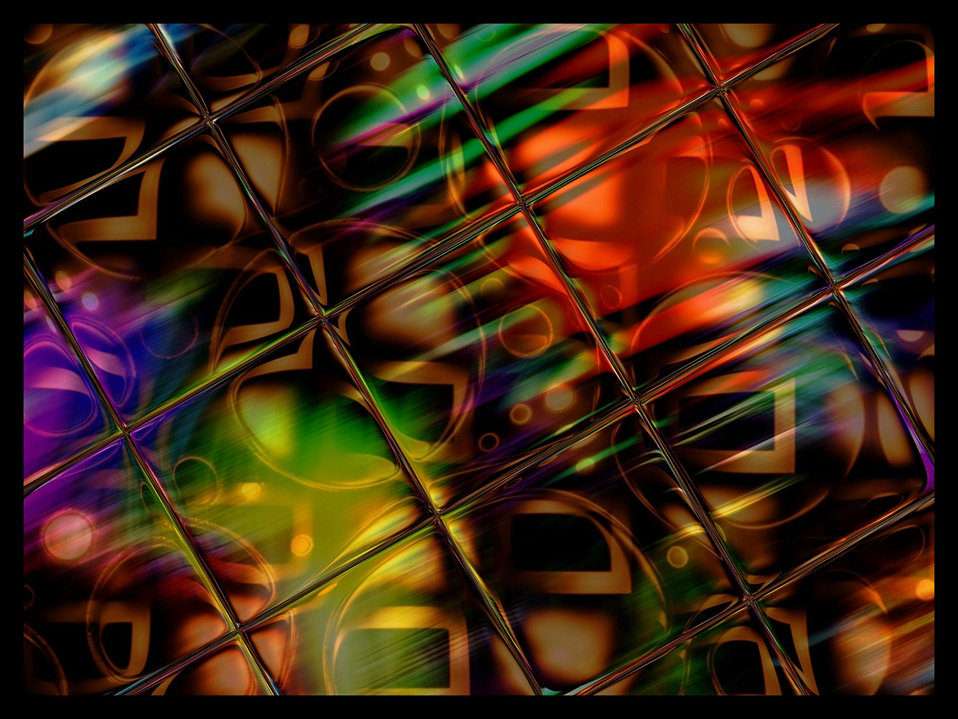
Colored glass

Colorful glass tiles.